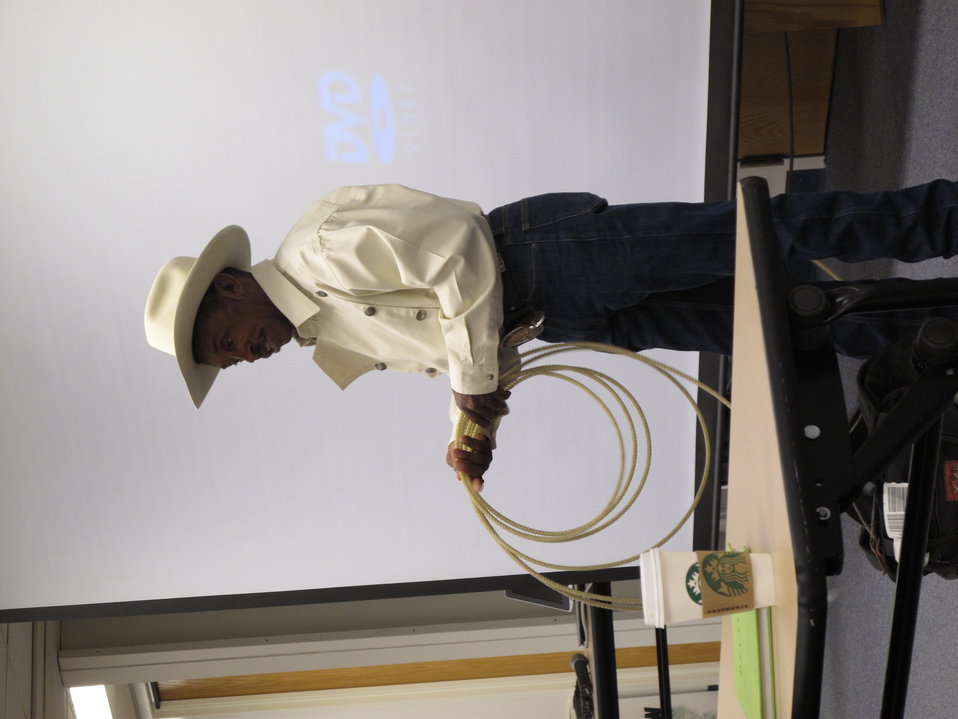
Charles Sampson and his lasso

Charles Sampson shows his lasso while he talks about his 20 year career as a rodeo cowboy.